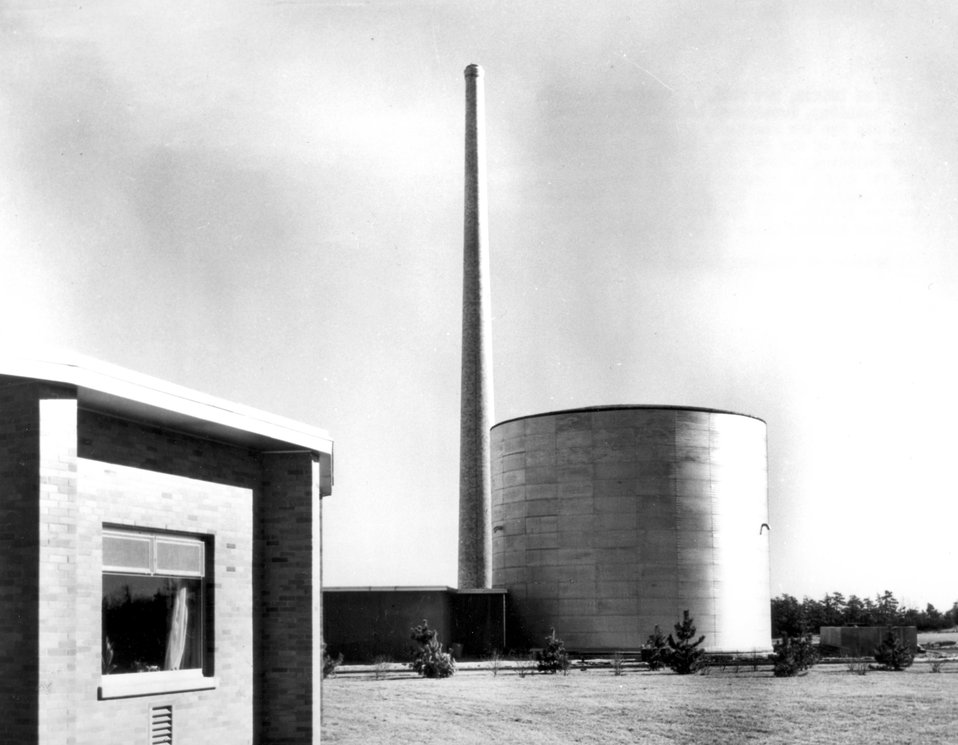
Medical research reactor building, Cooling air for the reactor's graphite reflector is forced out of the 150-foot stack. The steel reactor building, which is 60-feet in diameter and 54 feet high, is connected to the main medical research complex.
c.1960